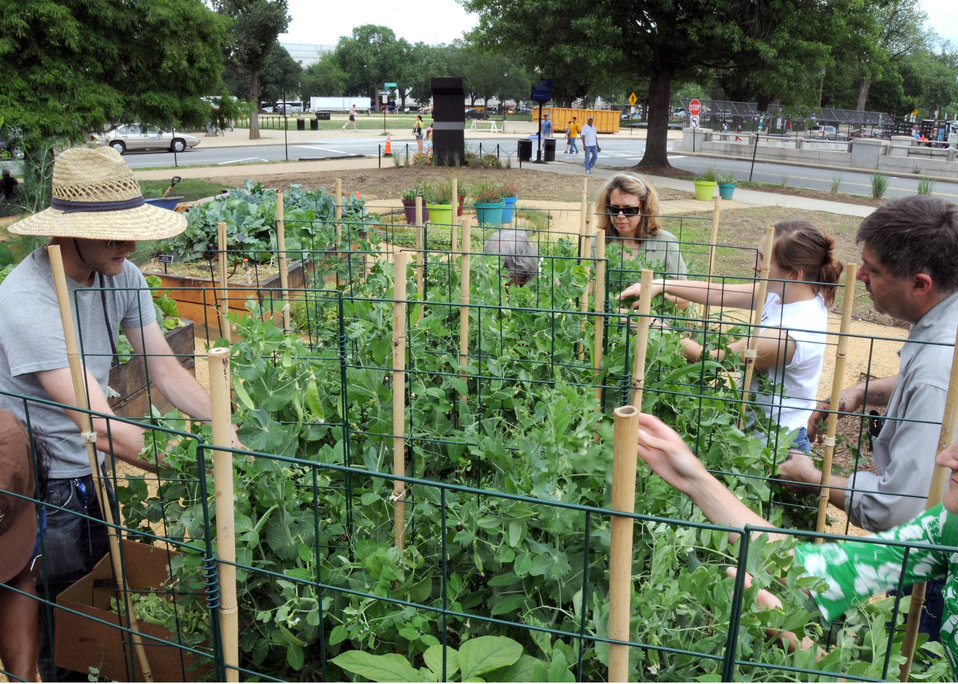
U. S. Department of Agriculture employee (USDA) volunteers harvest the first crop of vegetables from the USDA People’s Garden in Washington, DC, on Friday, May 28, 2010. Volunteers harvest a variety of peas; sugar snap peas, snow peas, and shell peas. All vegetables harvested are donated to local area food banks. USDA photo 10di1384-86.